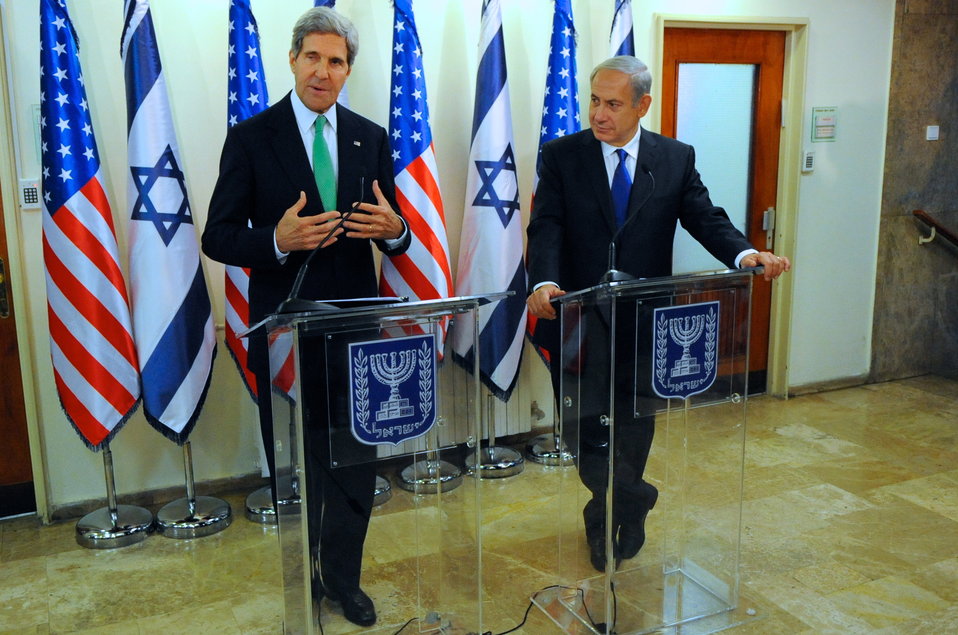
Secretary Kerry Speaks About Peace Negotiations, Syrian Chemical Weapons

U.S. Secretary of State John Kerry makes a statement about Middle East peace talks and Syrian chemical weapons following a meeting with Israeli Prime Minister Benjamin Netanyahu in Jerusalem on September 15, 2013.